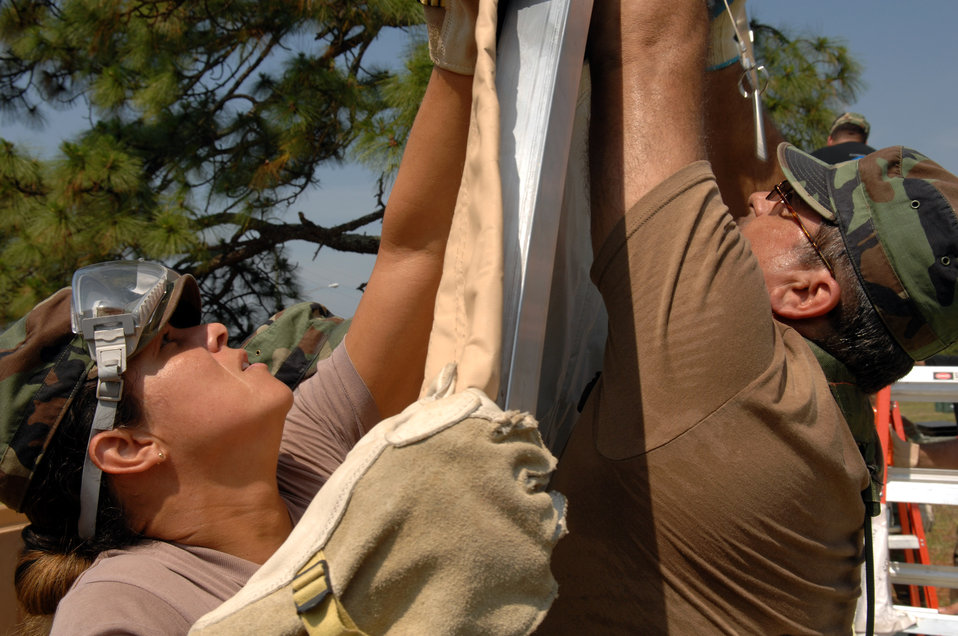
Setting up shelter

Tech. Sgt. Marie Rivera (left) and Master Sgt. Caleb Principe erect a shelter during Exercise Golden Medic 2007 at Fort Gordon, Ga. The exercise provides training to Army and Air Force medical, combat support and service support units.